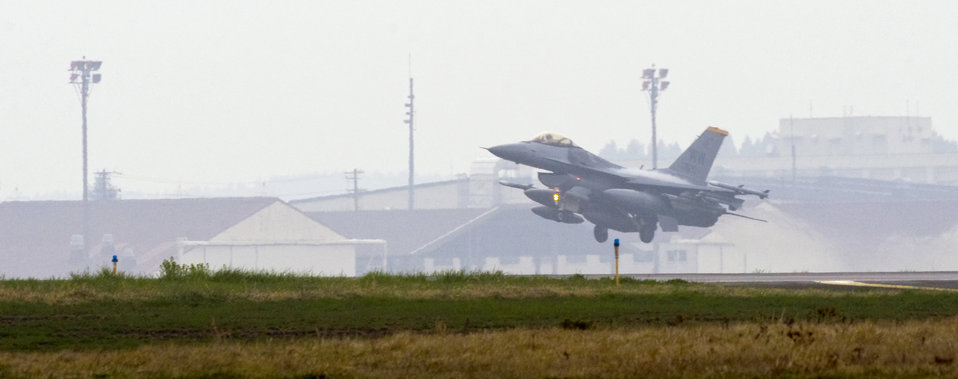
Misawa's Fighting Airmen deploy to South Korea

A pilot takes off in an F-16 Fighting Falcon, May 7, 2010, at Misawa Air Base, Japan. The pilot was one of approximately 350 Airman deployed to South Korea in an effort to maintain regional stability in the Asia-Pacific theater and promote stronger relations with U.S. allies.